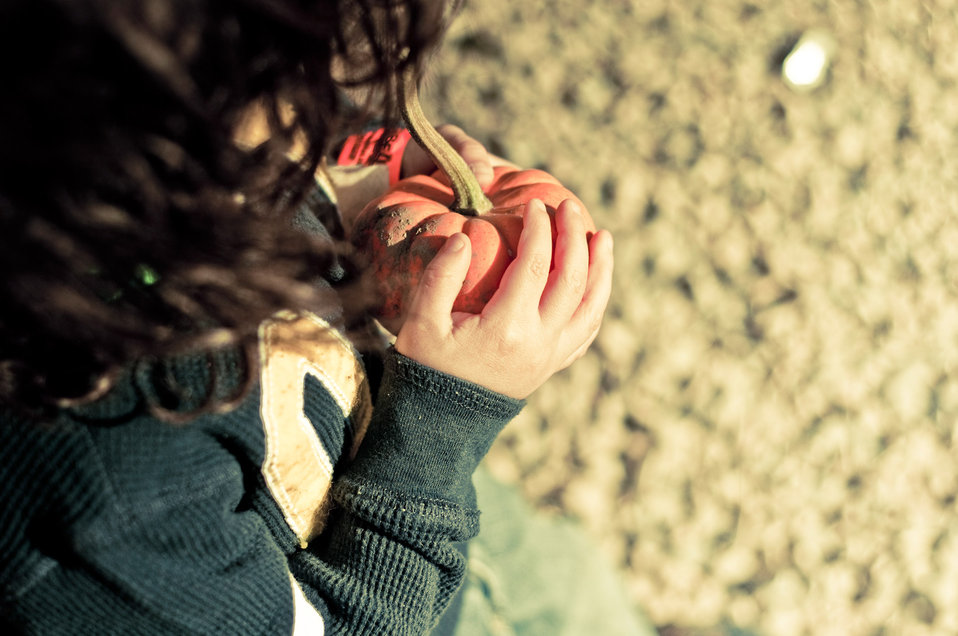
Small hands, small pumpkin

A little pumpkin cradled in toddler hands..